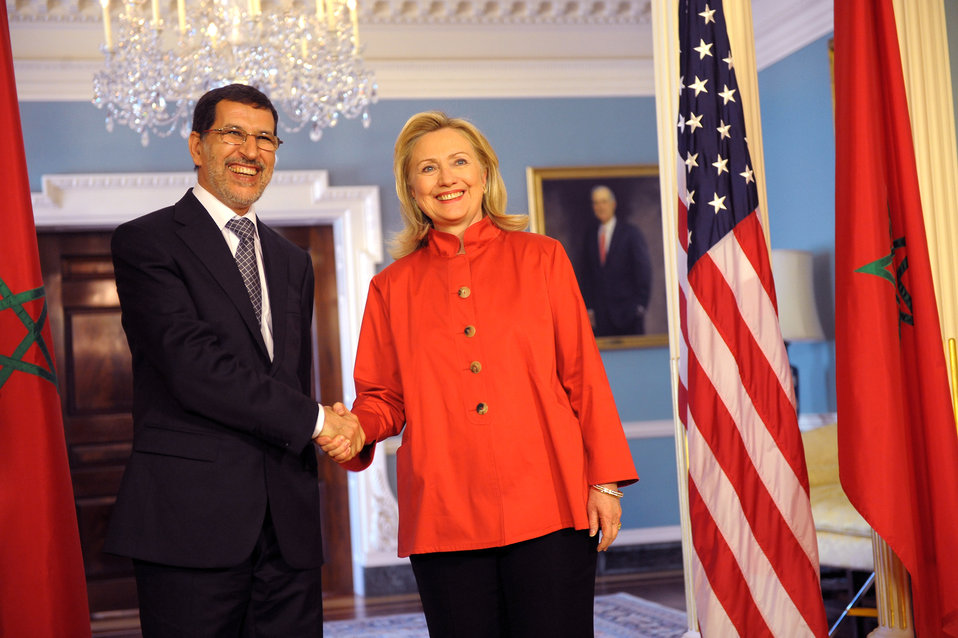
Secretary Clinton Meets With Foreign Minister Al-Othmani of Morocco

U.S. Secretary of State Hillary Rodham Clinton meets with Foreign Minister Saad-Eddine Al-Othmani of Morocco at the Department of State in Washington, D.C. on March 15, 2012.